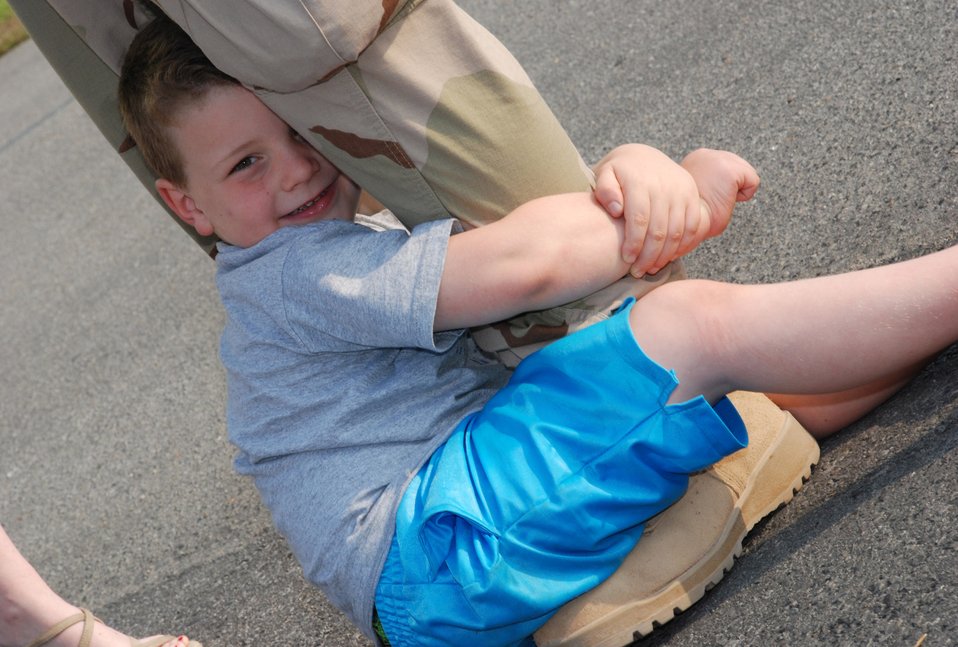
Eglin Airmen return from deployment

Damian Reandeau, 5, latches on to Staff Sgt. Thomas Duggan's leg during the homecoming celebration May 24 at Eglin Air Force Base, Fla. Family members gathered at Eglin AFB to welcome home more than 175 members of the 728th Air Control Squadron from a deployment in support of Operation Iraqi Freedom.